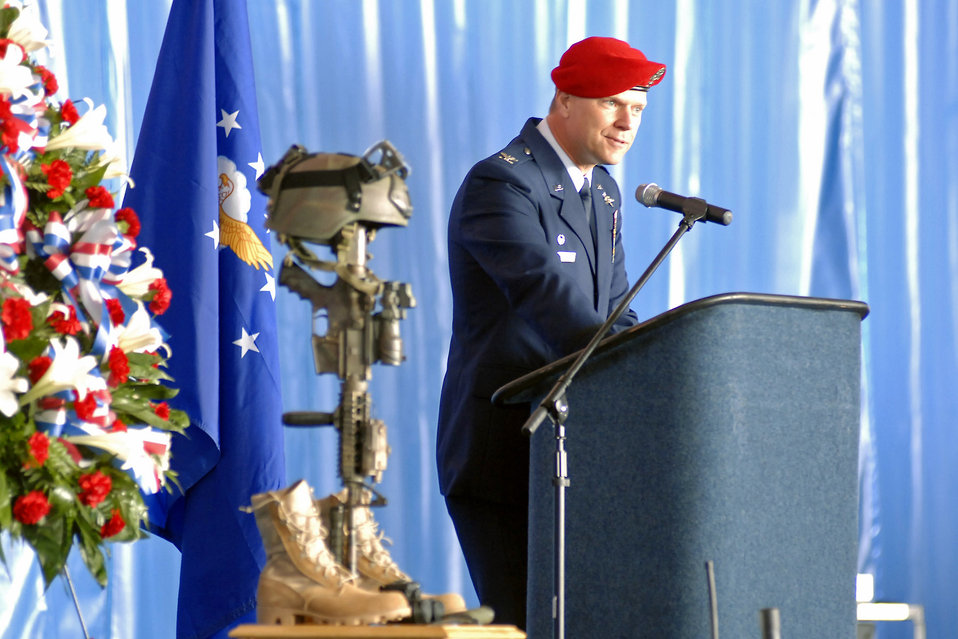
Pope officials remember fallen Airman

Col. Marc Stratton speaks during the memorial ceremony for Tech. Sgt. William Jefferson March 26 at Hangar 4 at Pope Air Force Base, N.C. Sergeant Jefferson of the 21st Special Tactics Squadron died in support of Operation Enduring Freedom March 22. Colonel Stratton is the 720th Special Tactics Group commander.